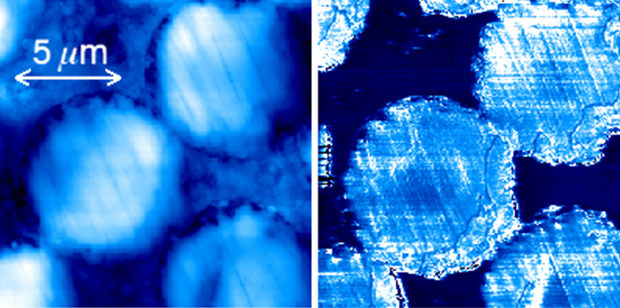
Atomic Force Microscope

An atomic force microscope normally reveals the topography of a composite material (l.) NIST's new apparatus adds software and electronics to map nanomechanical properties (r.) The NIST system reveals that the glass fibers are stiffer than the surrounding polymer matrix but sometimes soften at their cores.